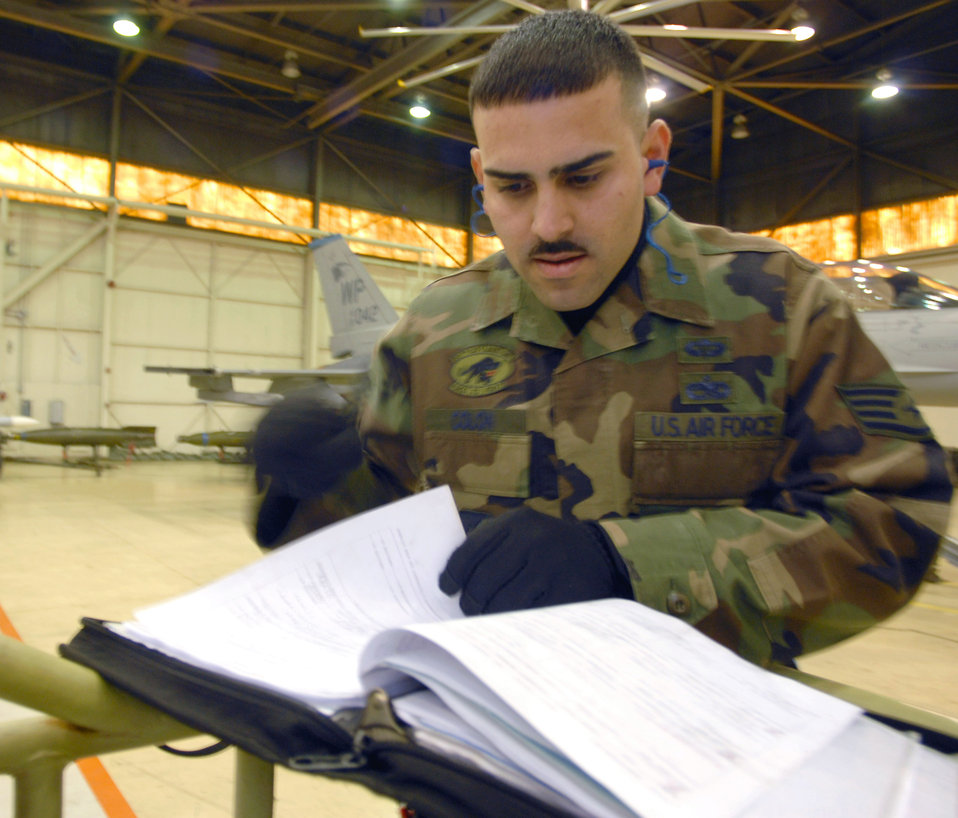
Heavy metal

Staff Sgt. Danny Colon reviews his checklist during the weapons load competition Dec. 14 at Kunsan Air Base, South Korea. This was the final weapons load competition between the 80th and 35th Fighter squadrons for 2007. Sergeant Colon is assigned to the 8th Aircraft Maintenance Squadron.